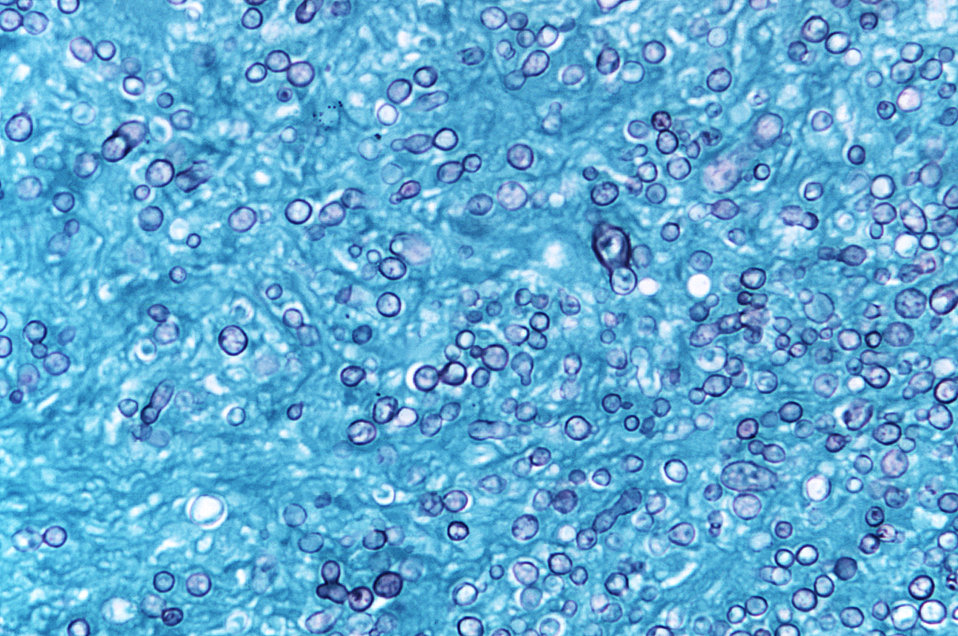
Magnified 300X, this photomicrograph revealed the presence of Histoplasma capsulatum var. duboisii fungal organisms in an unidentified tissue sample.What is histoplasmosis?